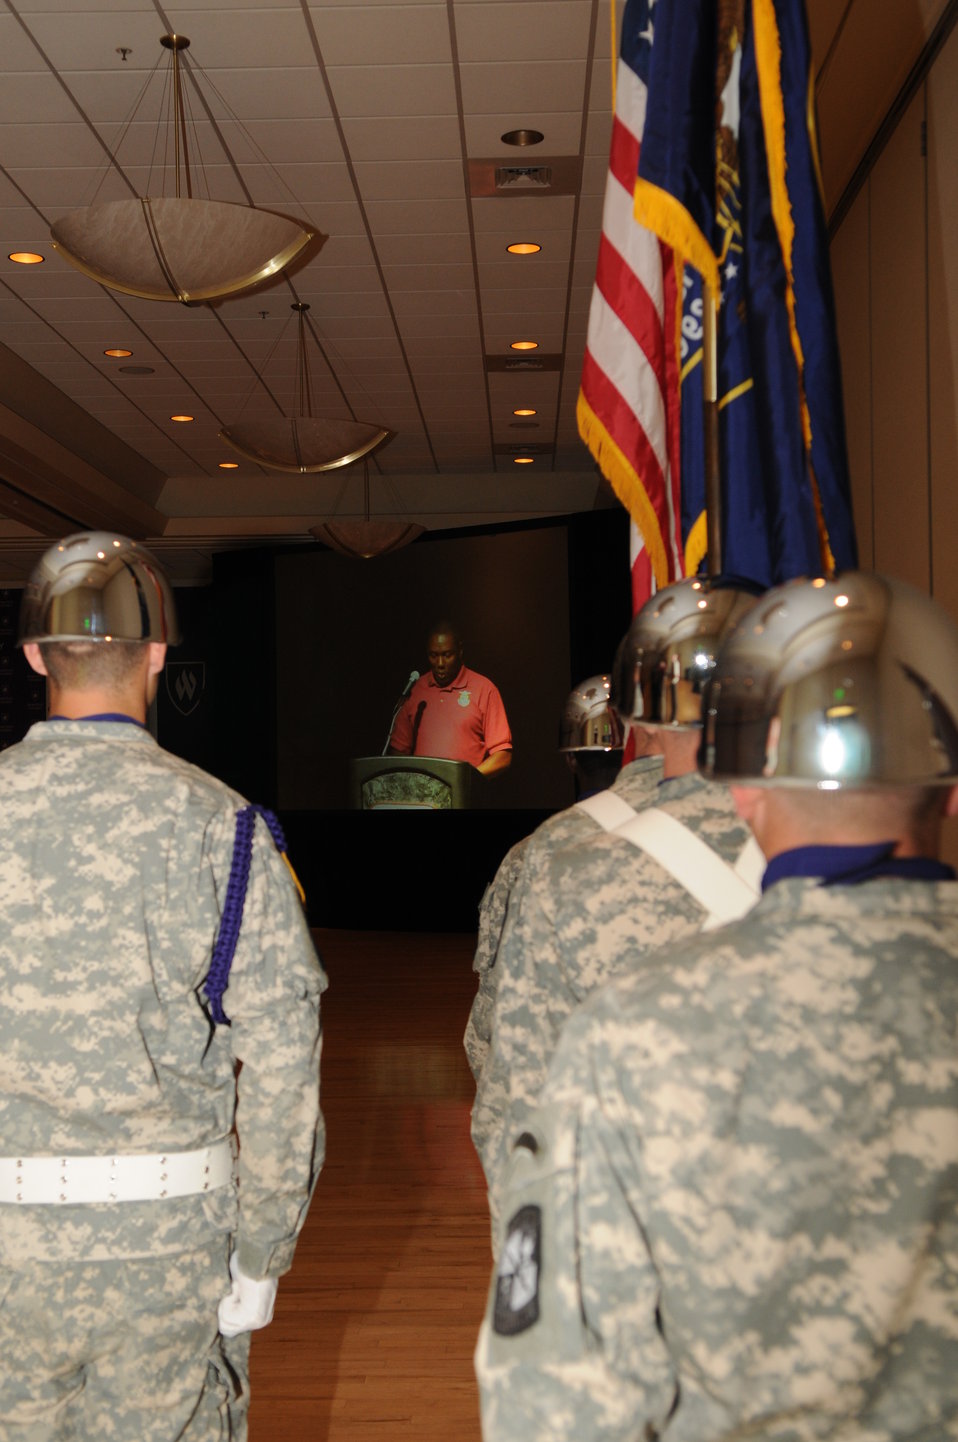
Presentation of Colors

The U.S. Fish & Wildlife Service sponsored the 2012 Federal Duck Stamp Art Contest September 28 and 29 in Ogden, Utah, at Weber State University. A panel of five judges was responsible for choosing the art work used to design the 2013-2014 Migratory Bird Hunting and Conservation Stamp.